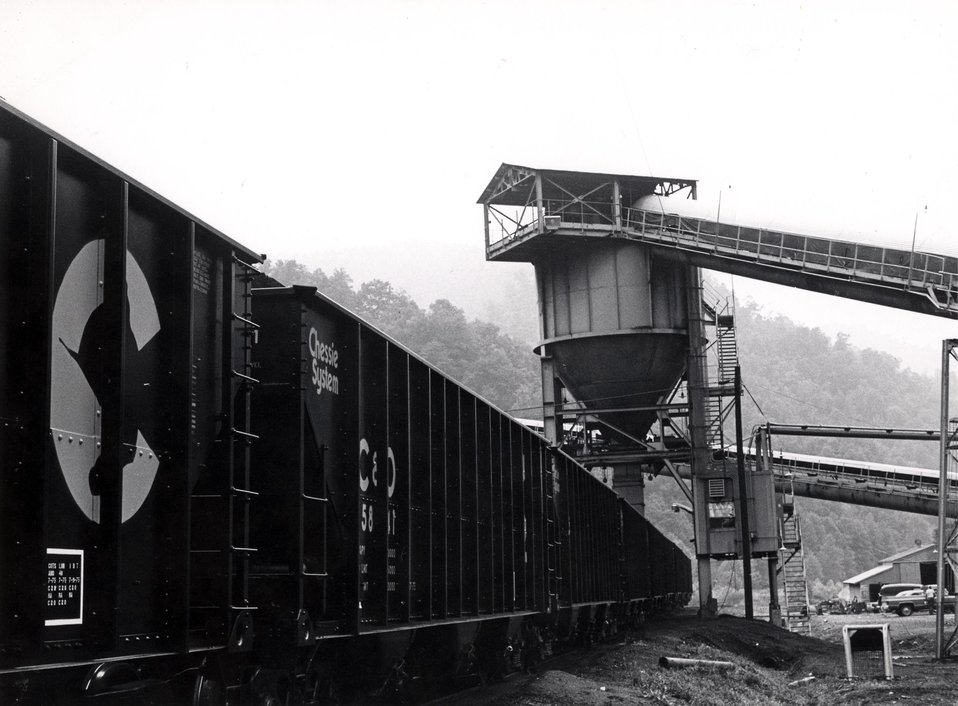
Chessie System coal hopper cars being loaded at Harris Mine tipple, Harris, W.VA.